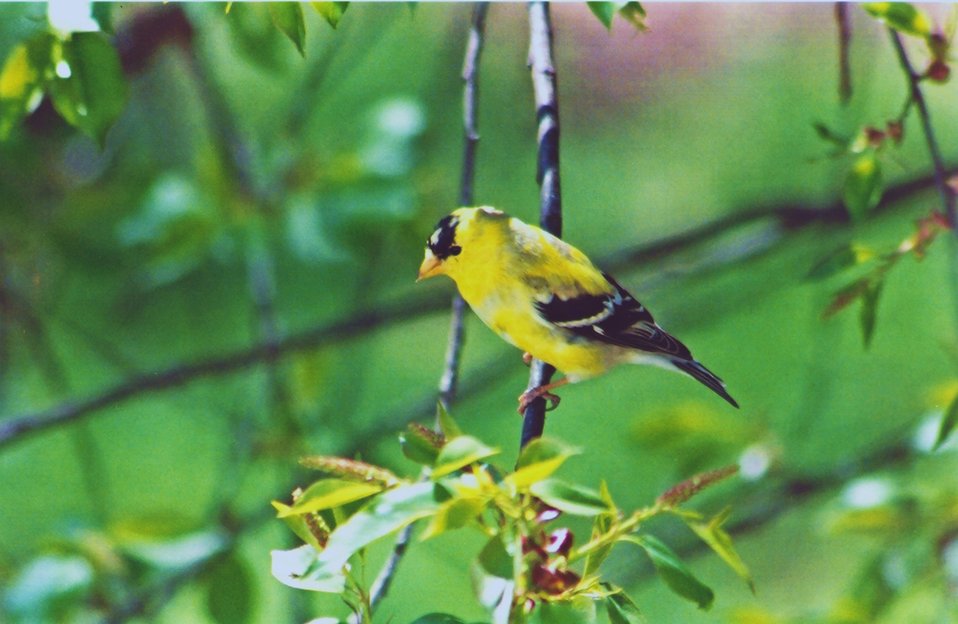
American goldfinch (Carduelis tristis) on a tree branch.